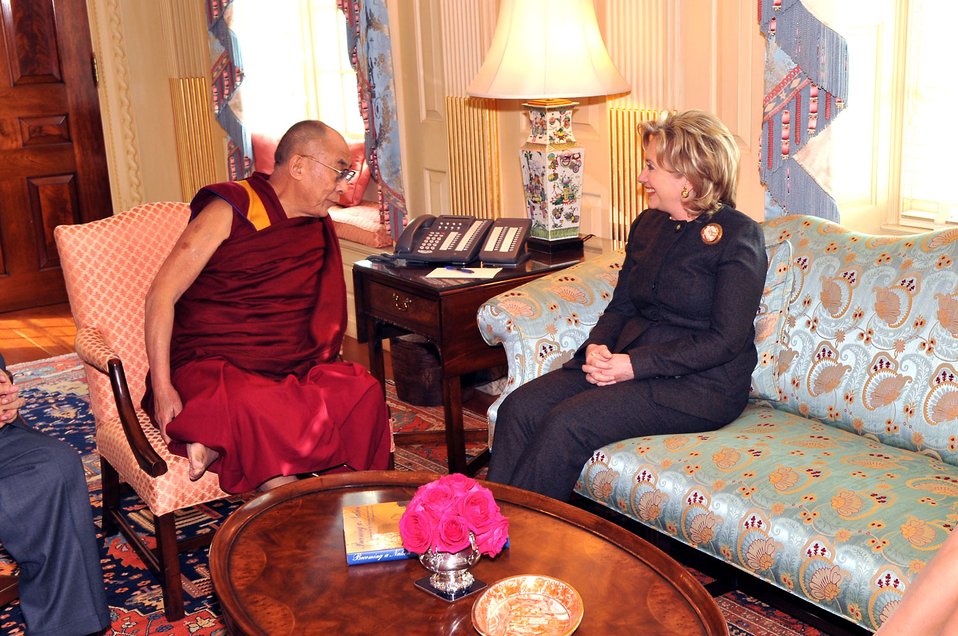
Secretary Clinton Meets With His Holiness the Dalai Lama

U.S. Secretary of State Hillary Rodham Clinton meets with His Holiness the Dalai Lama, at the Department of State in Washington, DC February 18, 2010.